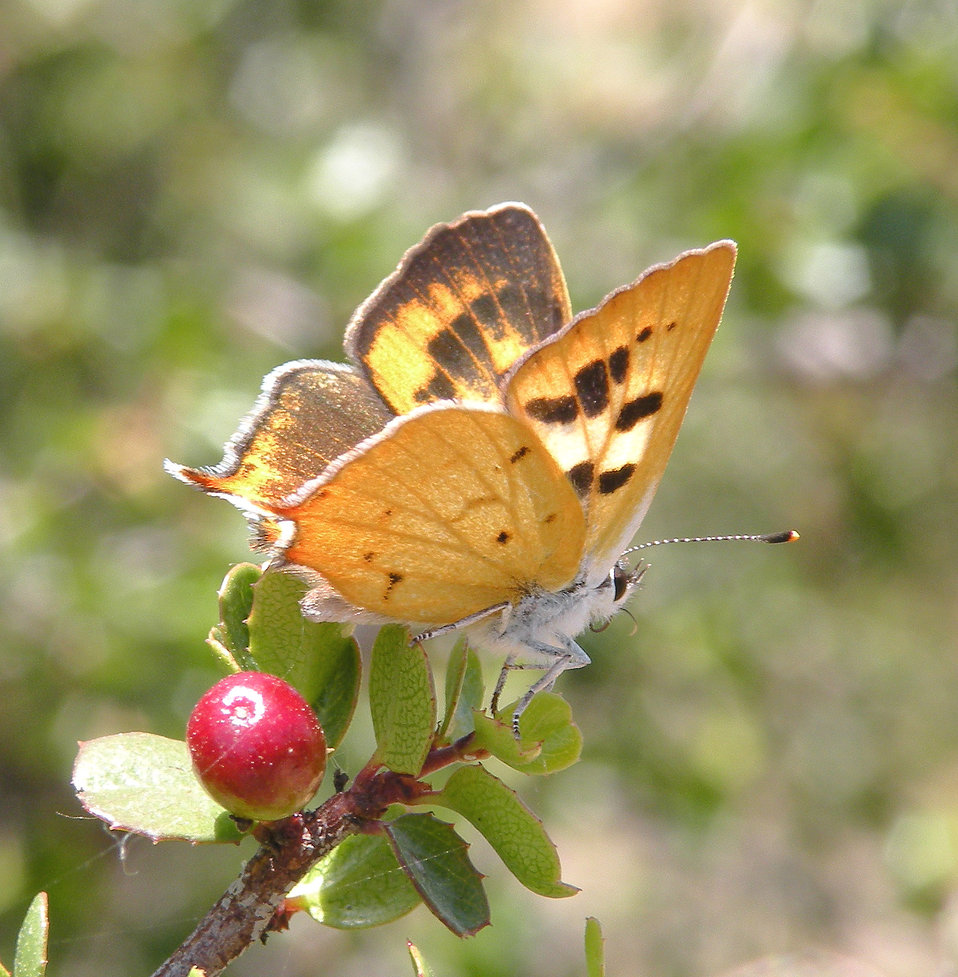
Hermes copper butterfly is found primarily in San Diego County, California, with a few records of the species documented in Baja California, Mexico. It inhabits coastal sage scrub and southern mixed chaparral and lays its eggs on its larval host plant, spiny redberry.